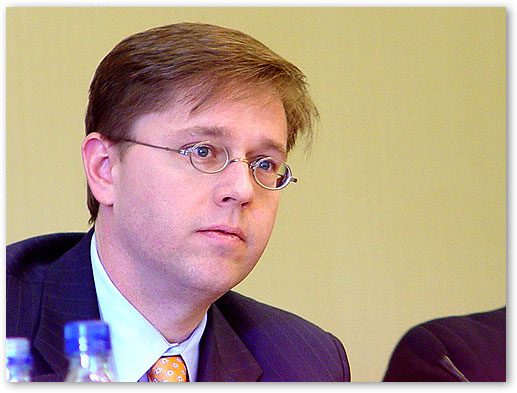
Chairman Kevin Martin.